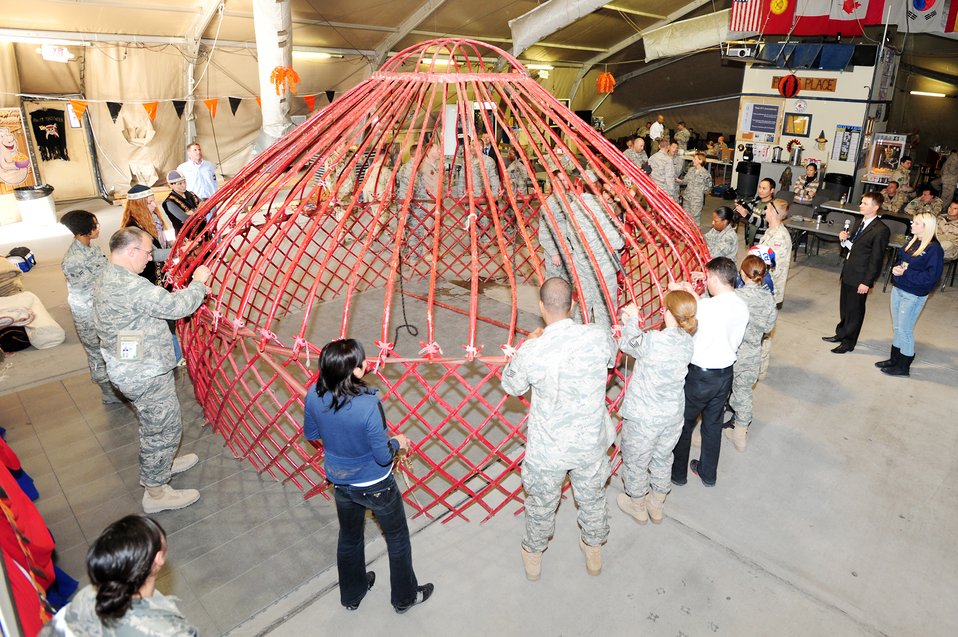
Airmen learn traditions during Kyrgyz Cultural Day

A traditional Kyrgyz yurt is constructed by those stationed at the at the Transit Center at Manas, Kyrgyzstan, as part of Kyrgyz Culture Day recently. The yurt is made from wood, leather, and materials for walls and roofing.